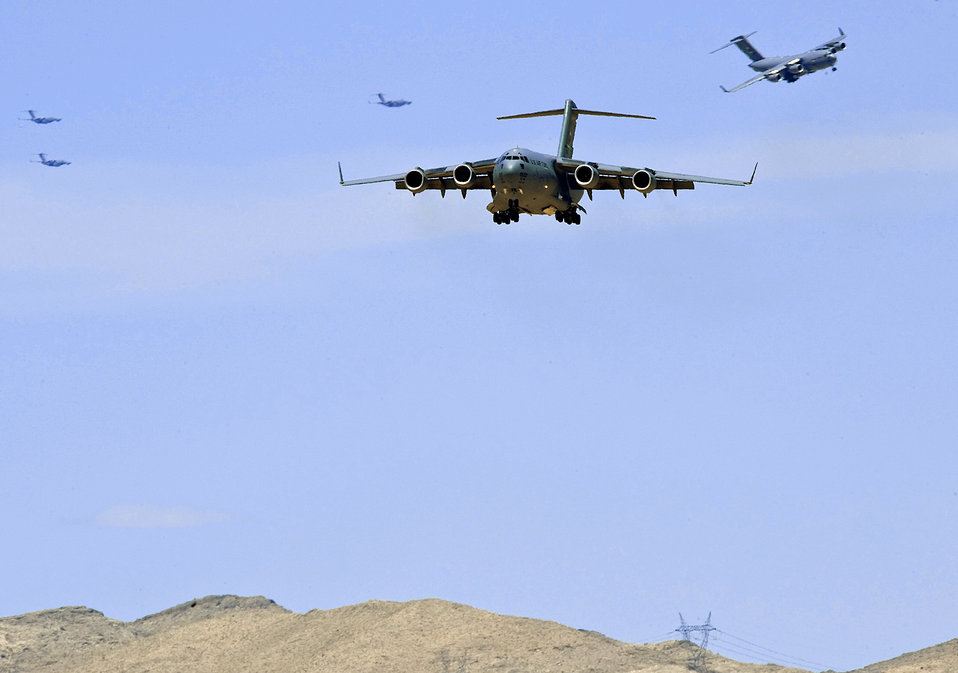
Time to come home

C-17 Globemaster IIIs prepare to land at Nellis Air Force Base, Nev., May 19, 2010, after participating in a mobility exercise over the Nevada Test and Training Range. The exercise was part of the larger bi-annual U.S. Air Force Weapons School Mobility Air Forces exercise.